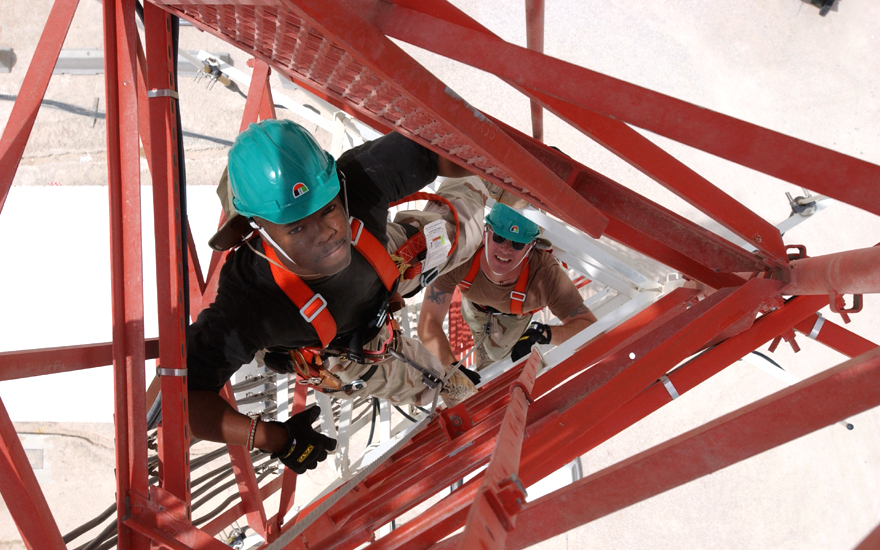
Climbing to the top

OPERATION IRAQI FREEDOM -- Tech. Sgt. Juan Russell (left), telephone switch technician, trains Master Sgt. Troy Deaton, Superintendent, Plans and Implementation Flight, how to properly use professional climbing equipment. Russell is deployed from Seymour-Johnson Air Force Base, N. C. and Deaton is deployed from Wright-Patterson AFB, Ohio